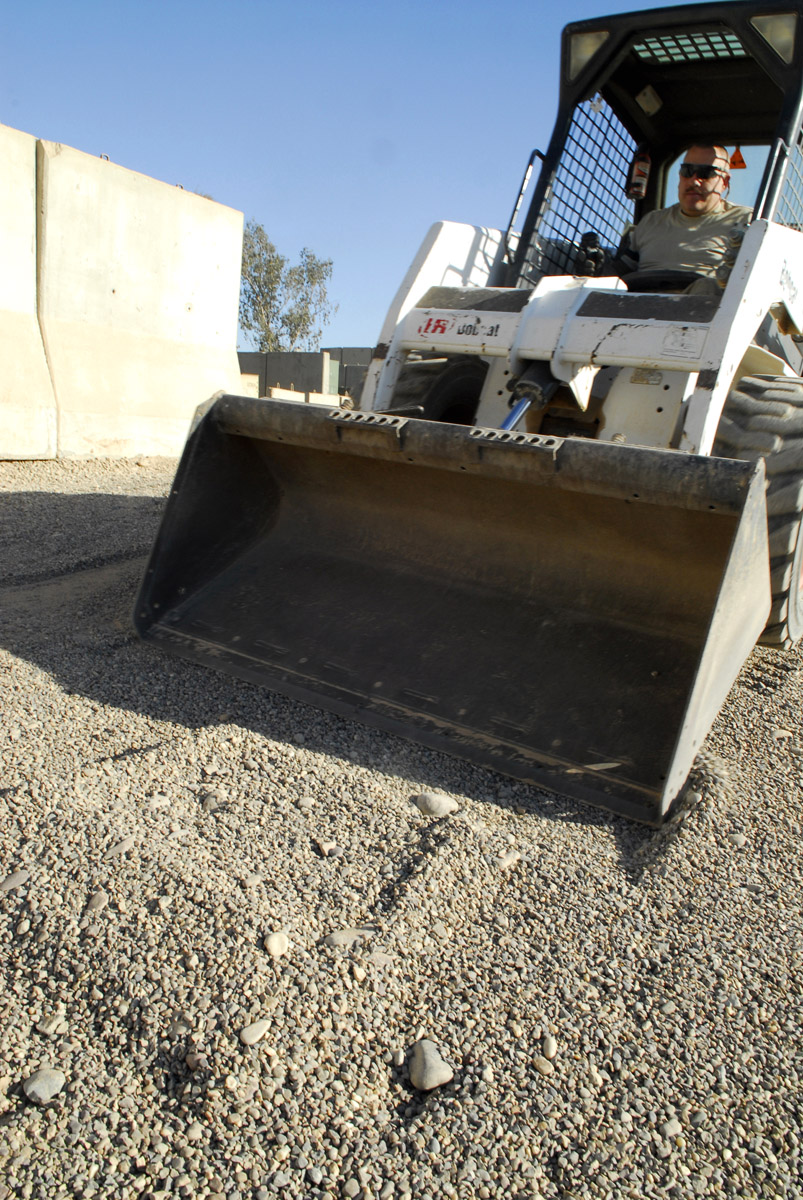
Muddy waters

Master Sgt. James MacDonald levels gravel using a skid loader Nov. 25 at Balad Air Base, Iraq. With the rainy season approaching, the gravel will allow members of 727th Expeditionary Air Control Squadron to walk through the site without their boots collecting too much mud. Sergeant McDonald, the 727th EACS Aerospace Ground Equipment Flight noncommissioned officer in charge, is deployed from Mountain Home Air Force Base, Idaho.